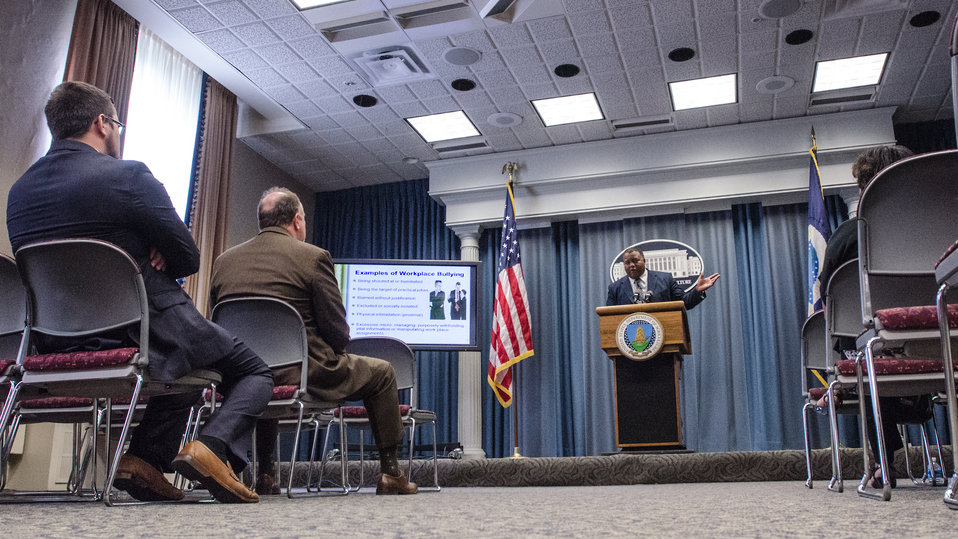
Bureau of Engraving and Printing Alternative Dispute Resolution Steering Committee member and mediator Leonardo Rowe leads the forum on Workplace Bullying during the U.S. Department of Agriculture (USDA) Rural Development’s (RD) 2nd Annual Cultural Transformation kickoff opening ceremony and forums, themed “Employees Influencing Change,” on Tuesday, Aug. 13, 2013 at USDA in Washington, D.C.